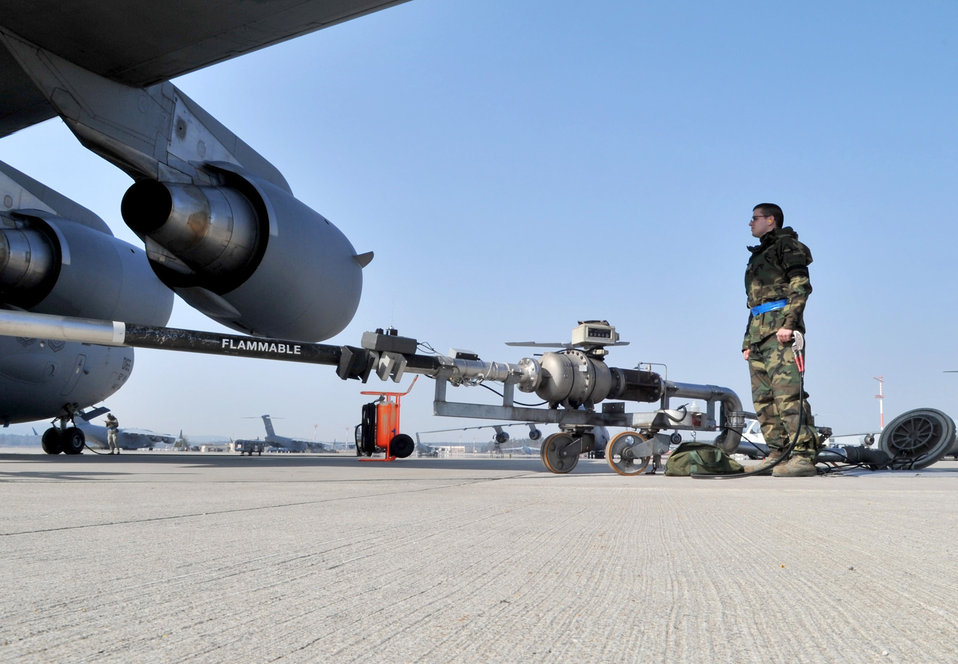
Aircraft ready for Odyssey Dawn

Airman 1st Class Jason O'Connor refuels a C-17 Globemaster III March 29, 2011, at Ramstein Air Base, Germany, in support of Operation Odyssey Dawn. O'Connor is a fuels distribution operator assigned to the 86th Logistics Readiness Squadron.